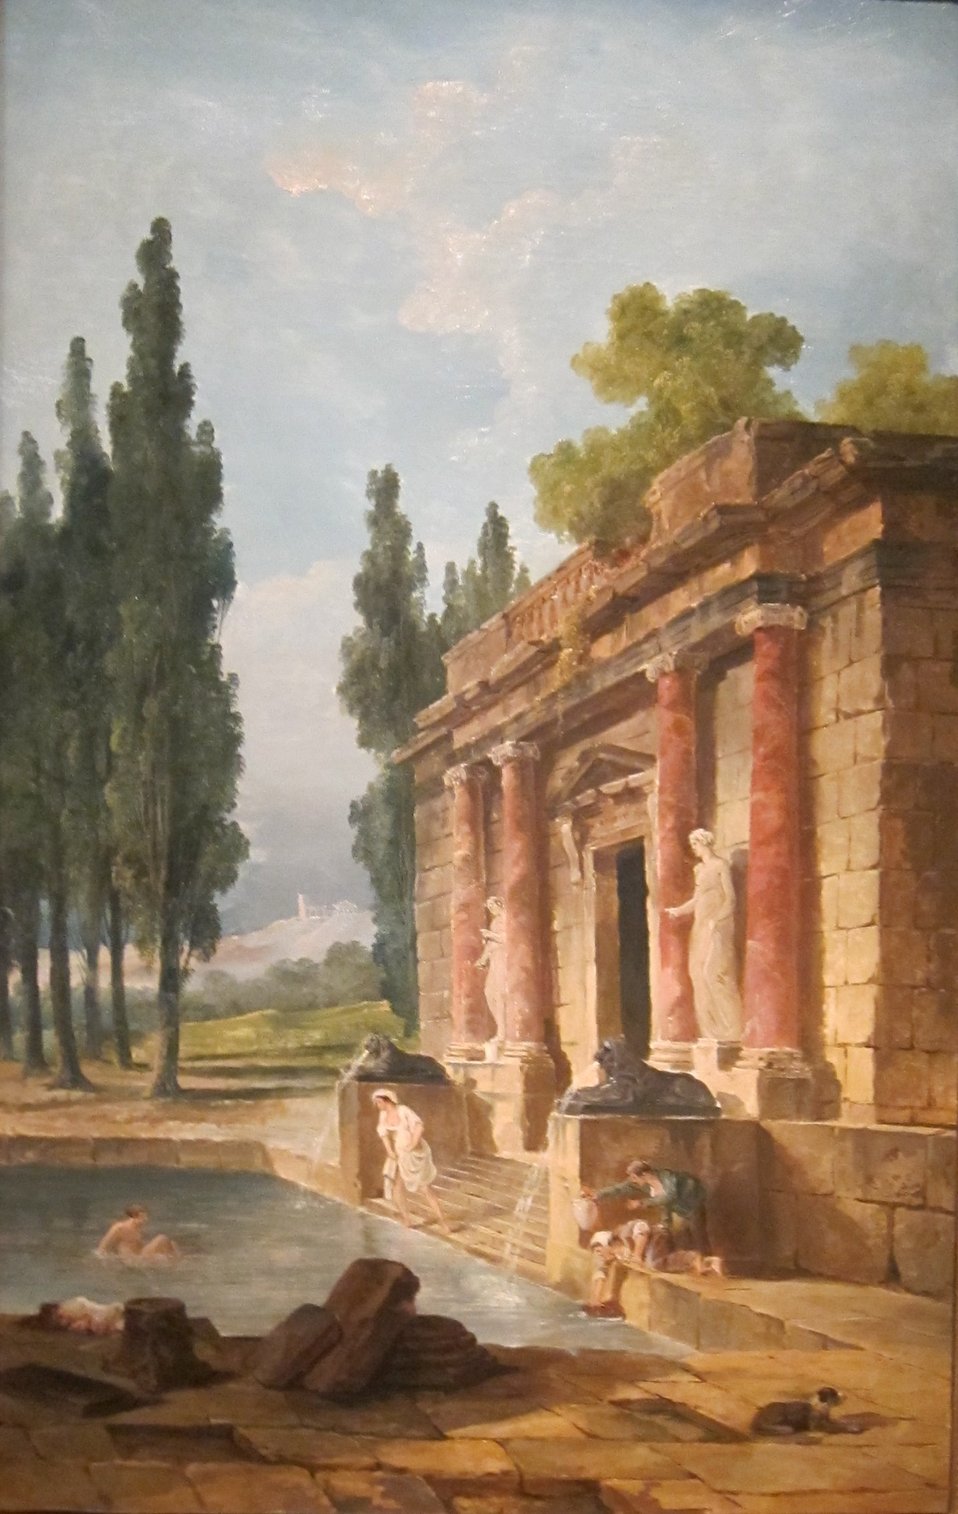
'The Bather' by Hubert Robert, Cincinnati Art Museum